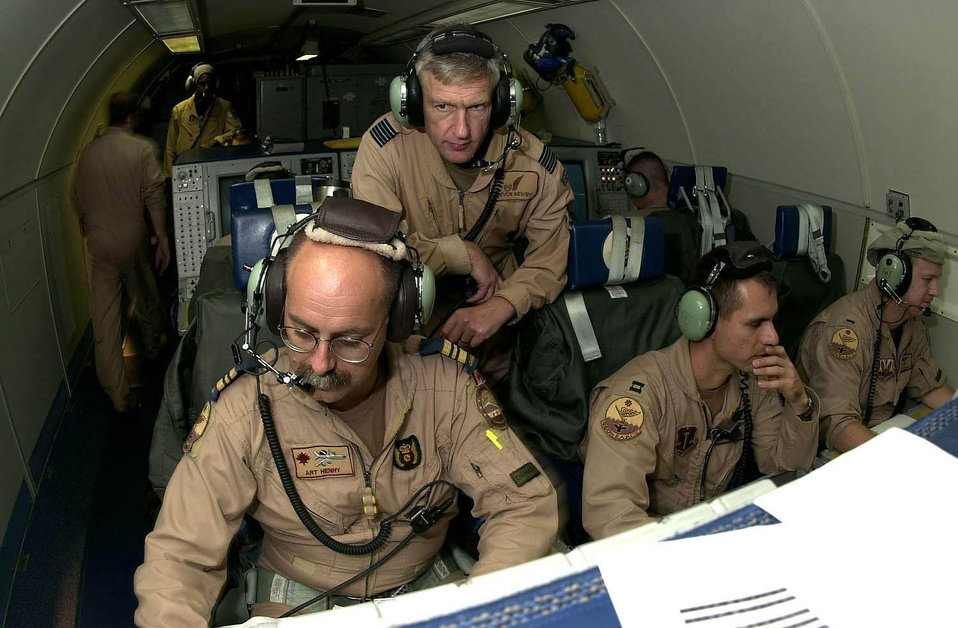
Together Again

OPERATION ENDURING FREEDOM -- A combined crew of Canadian and U.S. Air Force members monitor and direct several planes escorting C-17 Globemaster III planes into Afghanistan. The transport planes airdropped humanitarian rations in support of Operation Enduring Freedom.